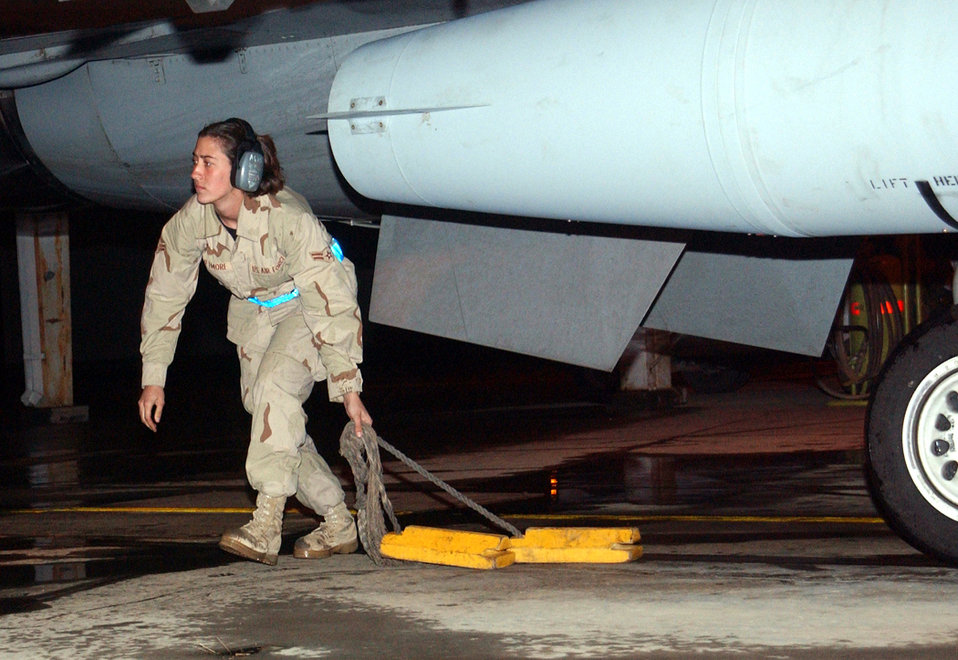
Wetmore

OPERATION IRAQI FREEDOM -- Airman 1st Class Christine Wetmore, 332nd Expeditionary Aircraft Maintenance Squadron, removes the chaulks from an F-16 prior to a mission from a desert air base in the Arabian Gulf Region. Operation Iraqi Freedom is the multinational coalition effort to liberate the Iraqi people, eliminate Iraq's weapons of mass destruction and end the regime of Saddam Hussein.